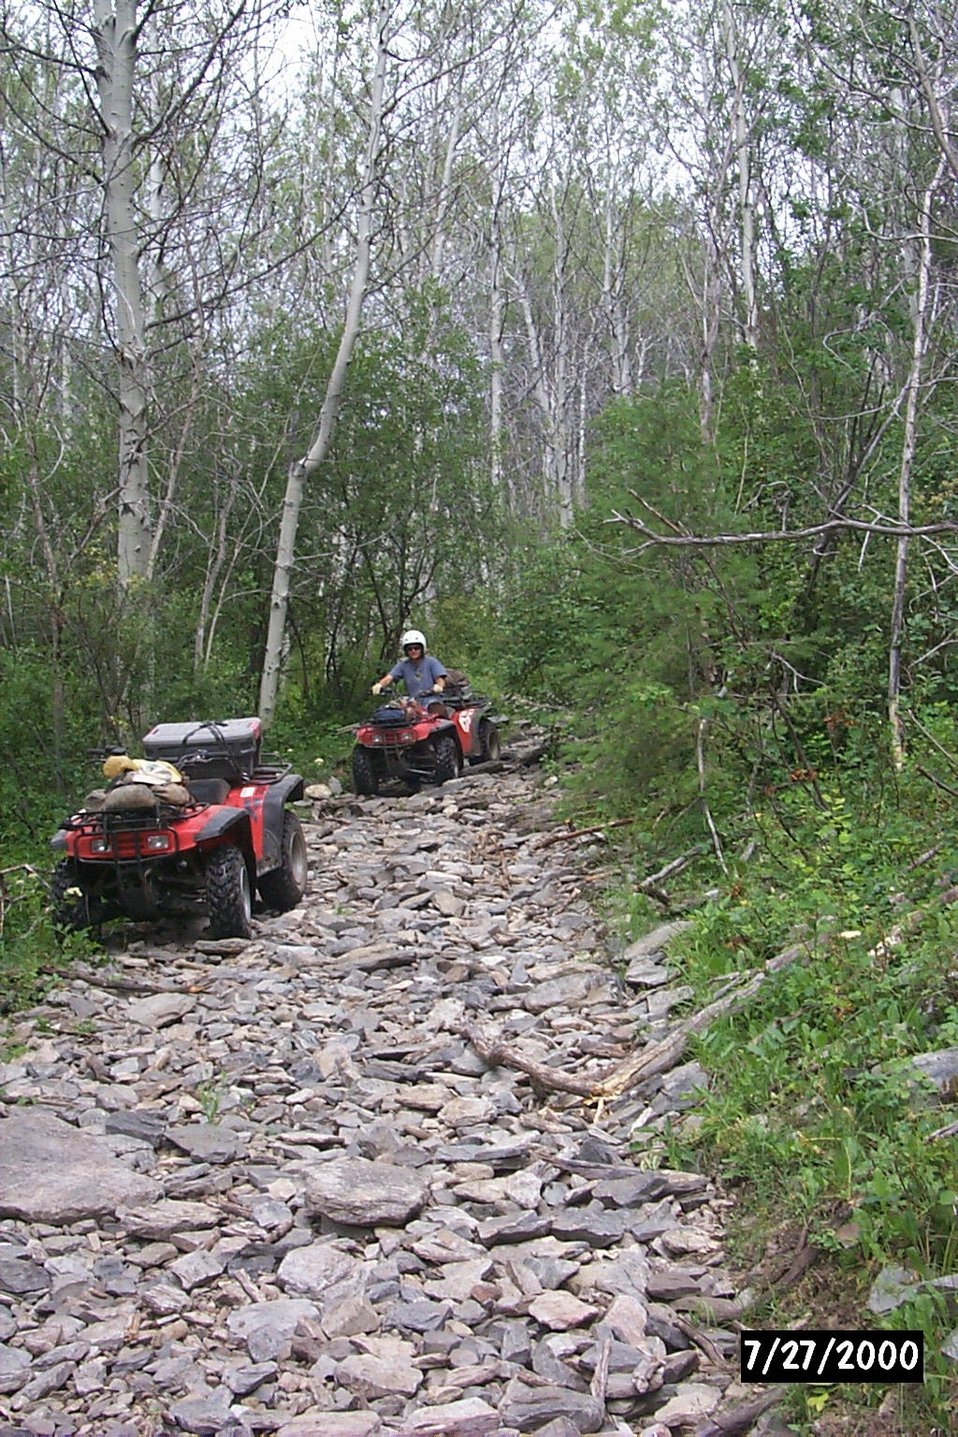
ATV People Salmon Field Office UCSC Upper Columbia Salmon Clearwater District